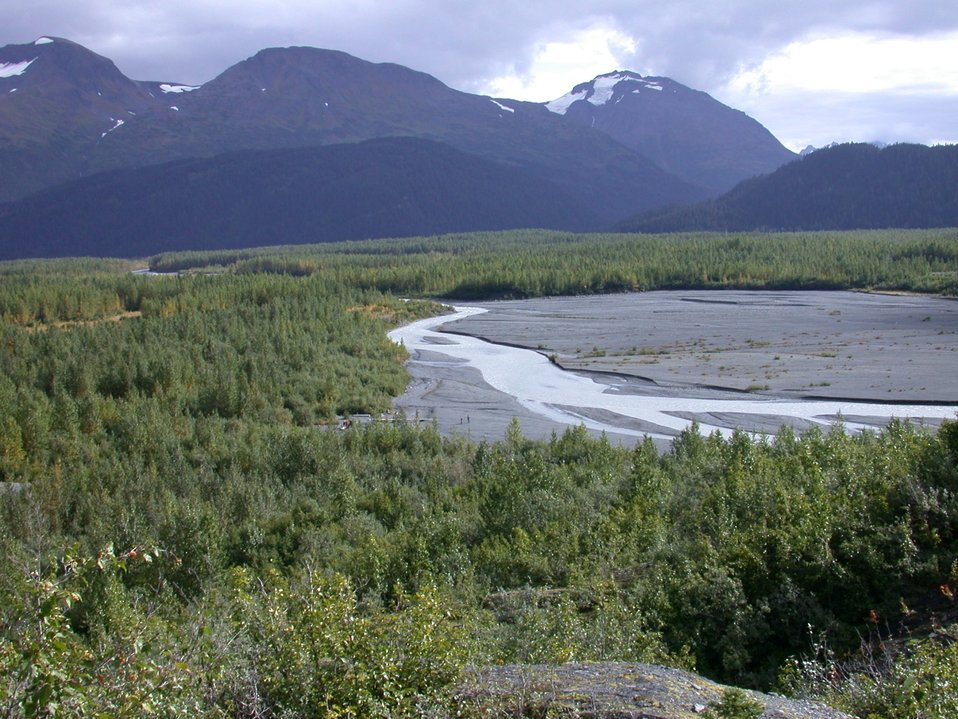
Moose Pass area between Seward and Anchorage.